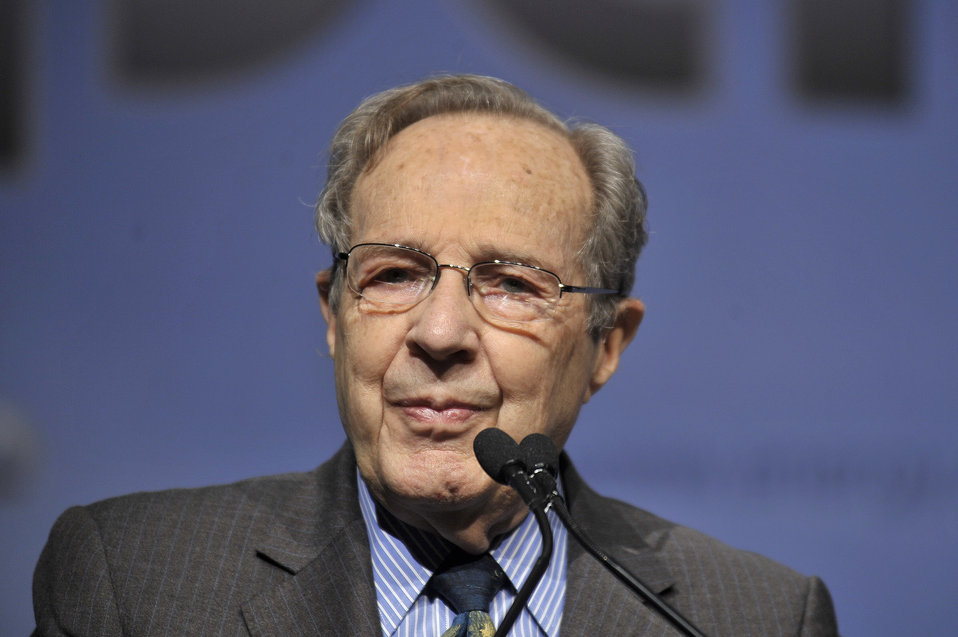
ARPA-E Energy Innovation Summit 2011, 81 of 83

William Perry Ph.D, Standford Professor and Former Secretary of Defense.